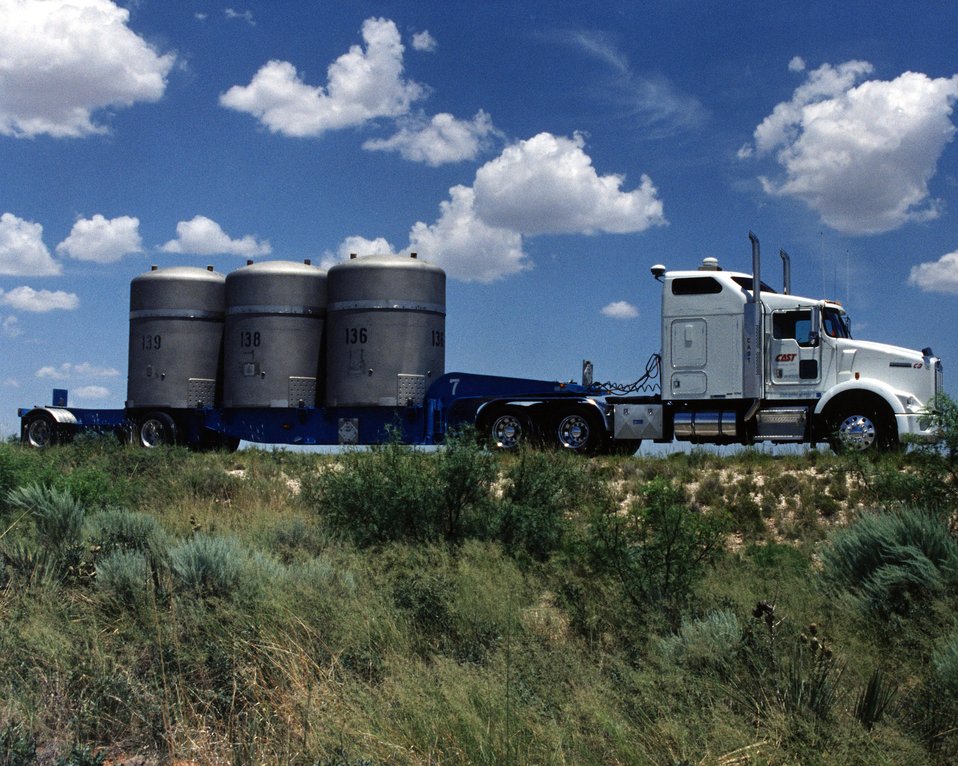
TRANSURANIC PACKAGE TRANSPORTER (TRUPACT) ON TRANSPORT TRUCK.

THE TRANSURANIC PACKAGE TRANSPORTER (TRUPACT) WAS DESIGNED TO TRANSPORT WASTE FROM THE GENERATOR SITES TO THE WASTE ISOLATION PILOT PLANT. WIPP, LOCATED SOUTHEAST OF CARLSBAD, NEW MEXICO, IS A DOE RESEARCH AND DEVELOPMENT FACILITY DESIGNED TO DEMONSTRATE THE SAFE DISPOSAL OF TRANSURANIC RADIOACTIVE WASTES.